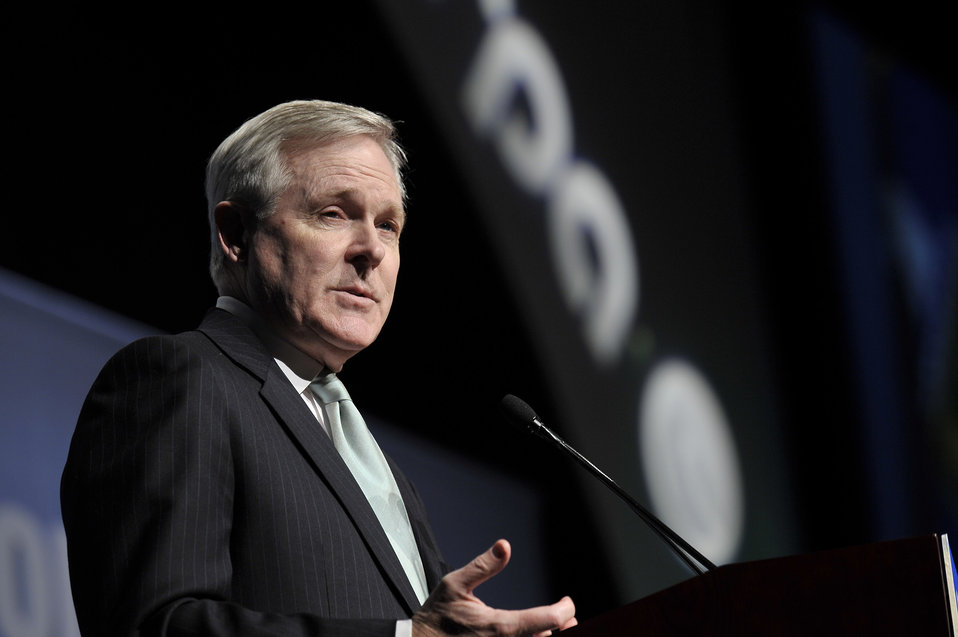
ARPA-E Energy Innovation Summit 2011, 80 of 83

Ray Mabus, Secretary of the Navy.